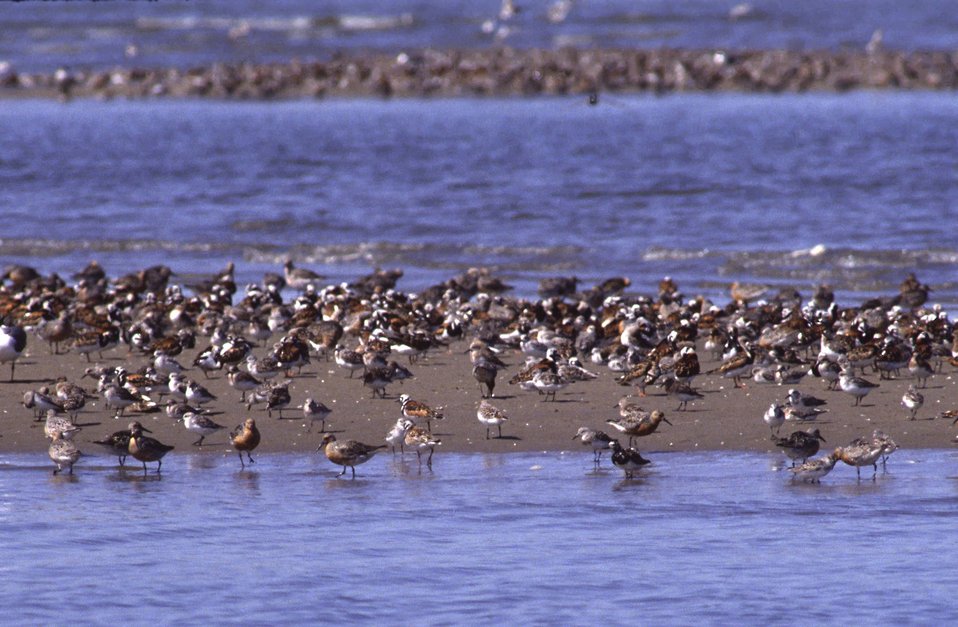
Norbury's Landing Mud Flats

Cape May National Wildlife Refuge, NJ.